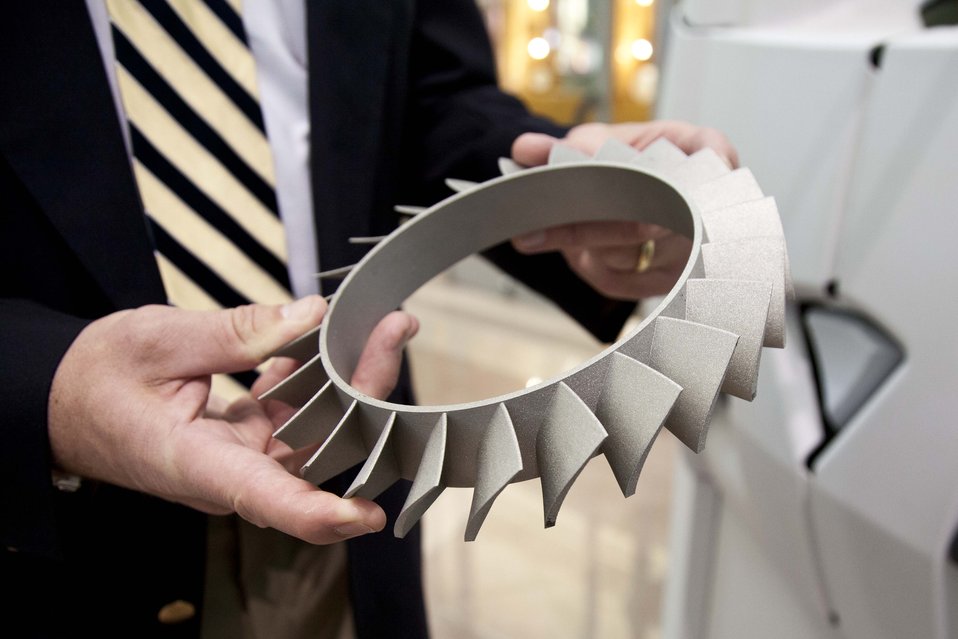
AEMC Summit

Not only can additive manufacturing change the way companies design and produce products, 3D printers are making it easier for companies to create products they couldn't manufacture in the past. Pictured here is a piece made using a metal powder that is layered on top of itself. The excess powder is then used to create additional layers, which helps to reduce material waste in manufacturing.